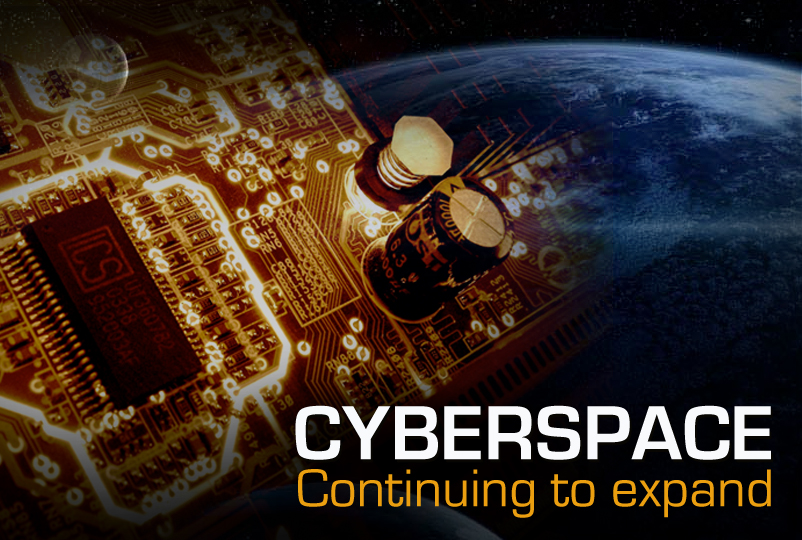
Cyberspace